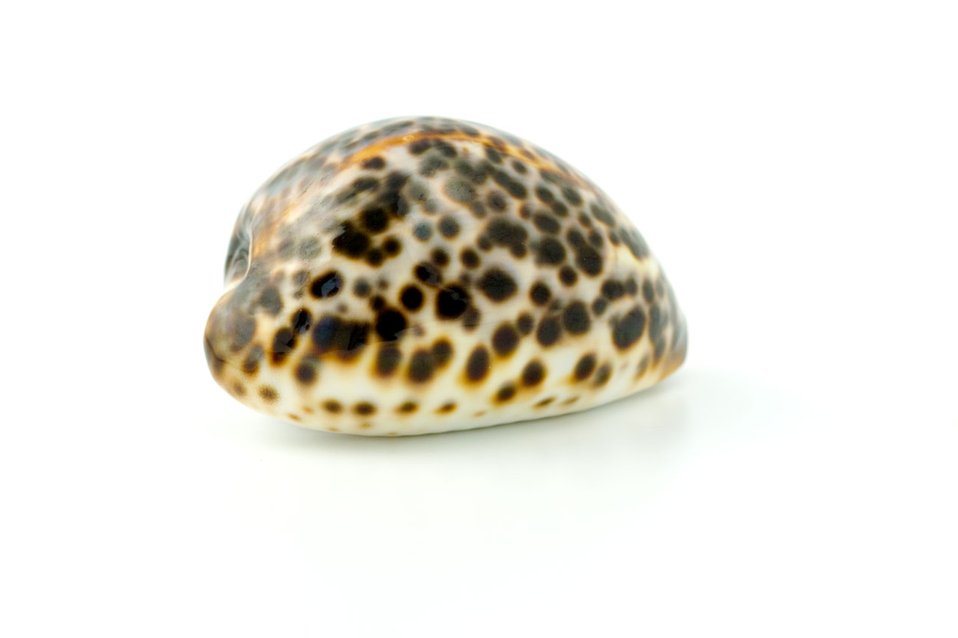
Seashell

Macro photo of a seashell.